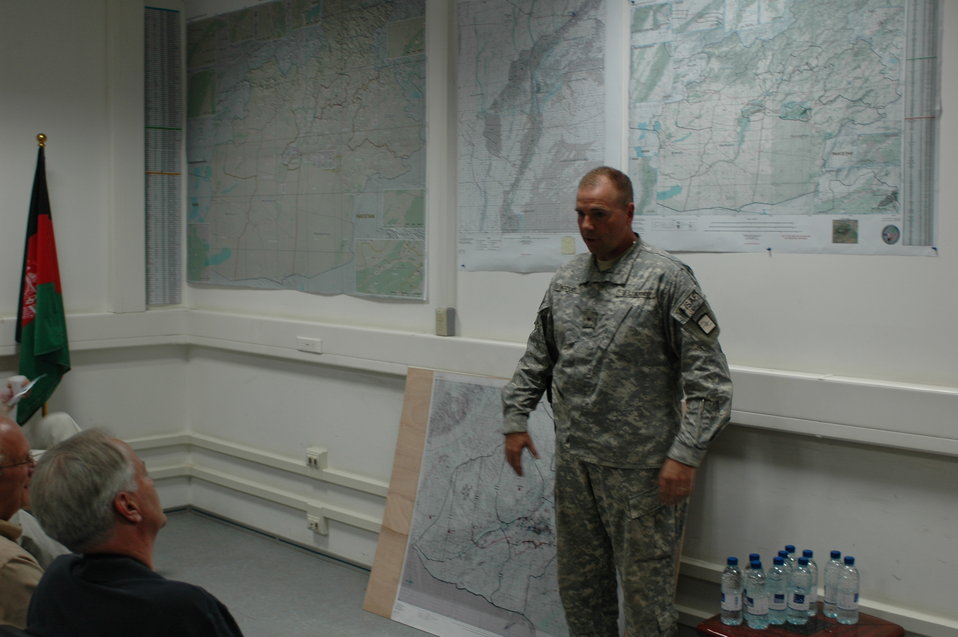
CODEL Berman